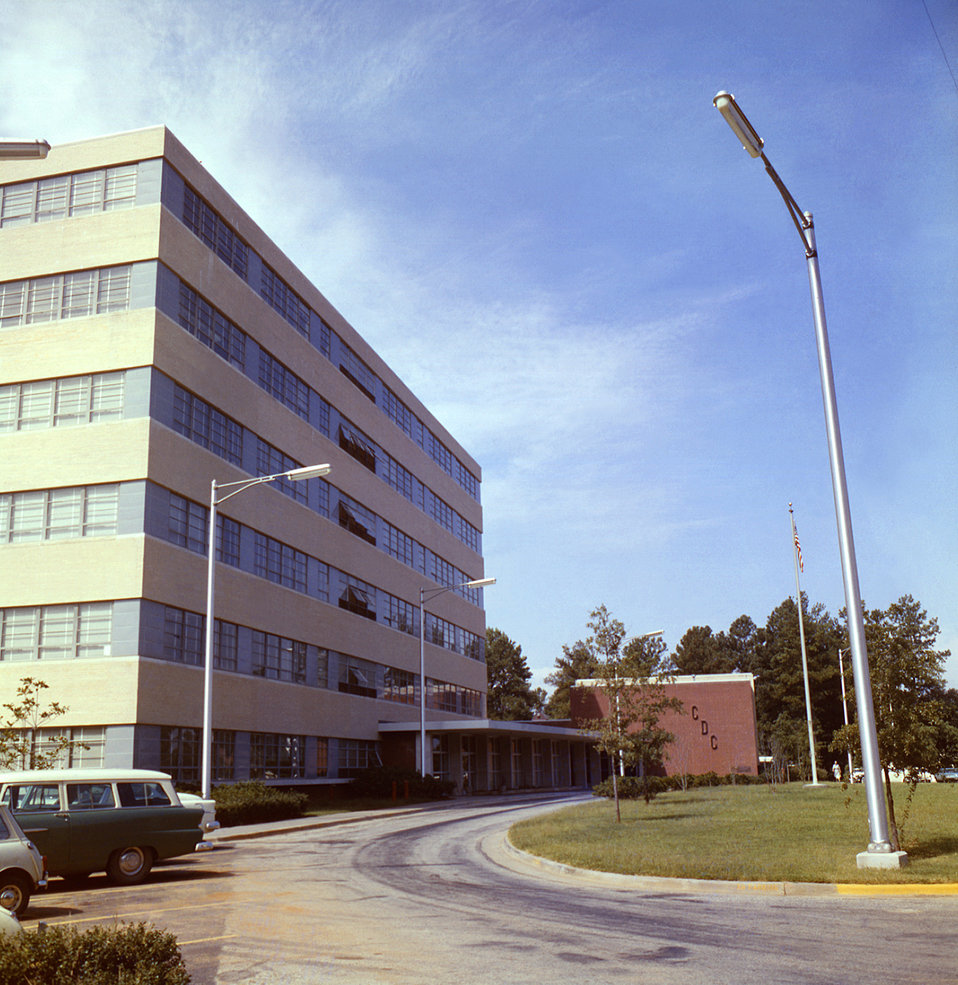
This historic 1963 view, depicts the front of what was once the main entrance to the Centers for Disease Control and Prevention (CDC), otherwise known as Building 1, located on Clifton Road, in Atlanta, Georgia.